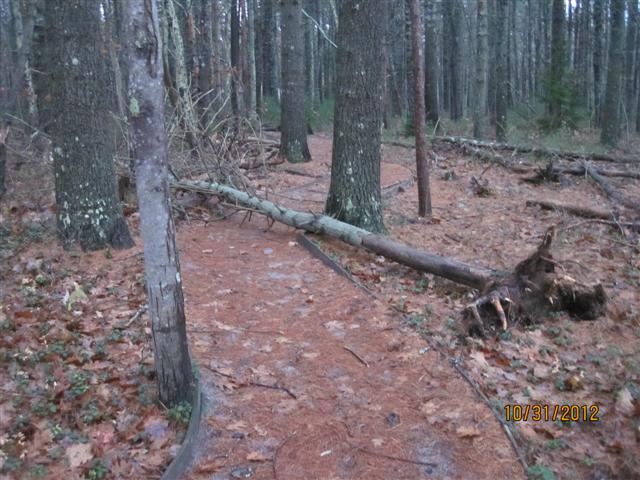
Hurricane Sandy hit Rachel Carson National Wildlife Refuge (ME)

Three trees down across the Carson Trail, only limbs fell on the Timber Point Trail.